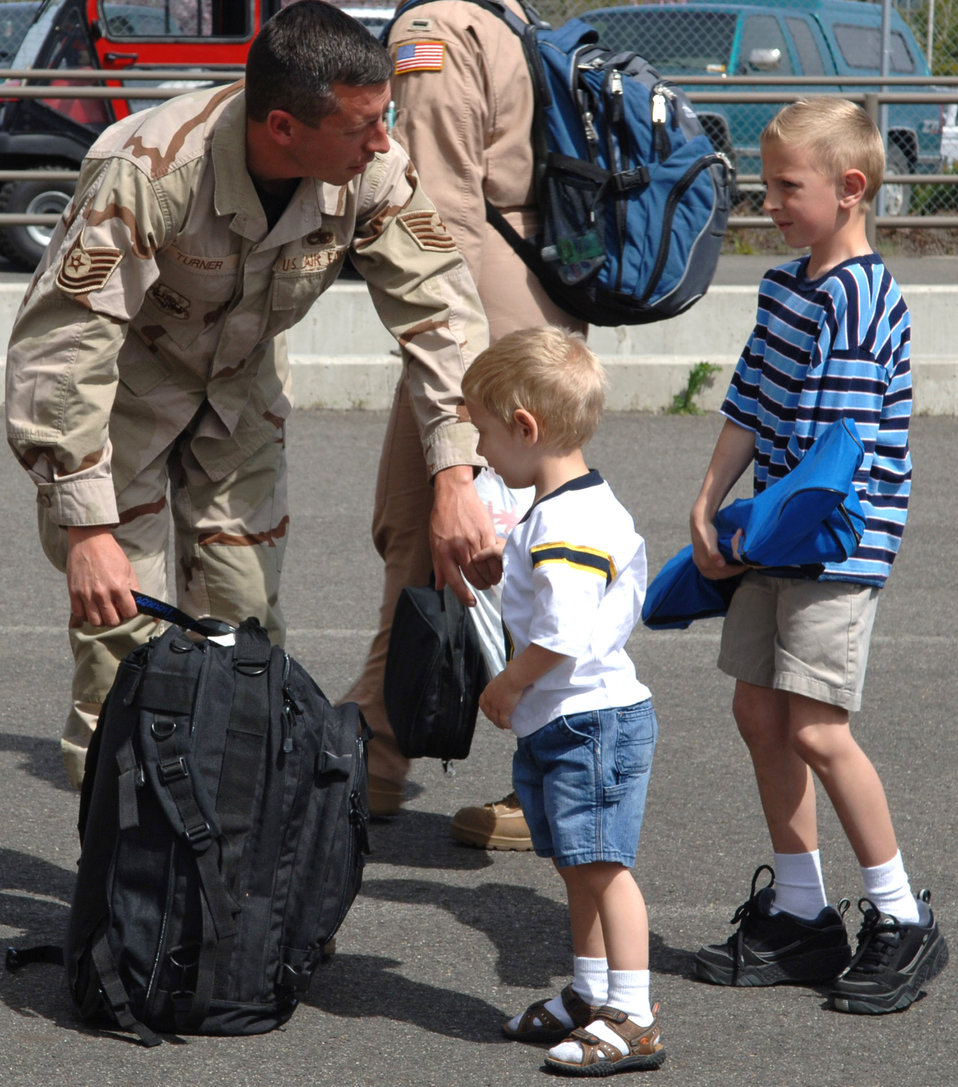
Fairchild Airmen reunite with family after deployment

Kole and Kade Turner stick close to their dad, Tech. Sgt. Kevin Turner, after going months without seeing him April 30 at Fairchild Air Force Base, Wash. Sergeant Turner returned with 44 other Airmen after their deployment to support Operation Enduring Freedom at Manas Air Base, Kyrgyzstan.